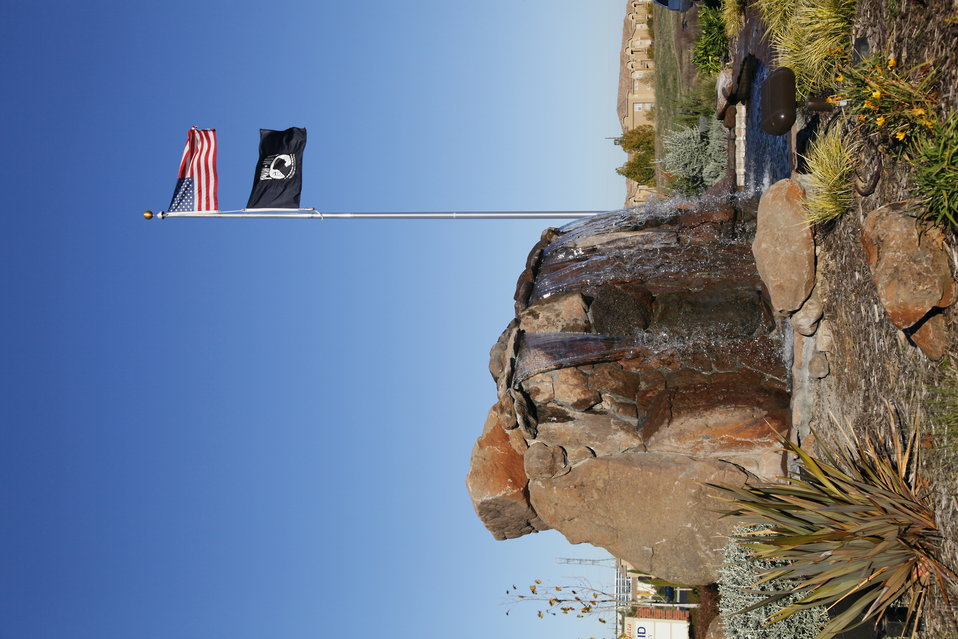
SACRAMENTO, Calif. (Nov. 29, 2010) – The United States flag and the Prisoner of War (POW) / Missing in Action (MIA) flag flap in the wind above the memorial for American veterans at the Veterans Plaza in Roseville, Calif. Designed by the U.S. Army Corps of Engineers Sacramento District, the plaza contains a new Armed Forces Career Center with recruiters representing the Navy, the Marines, the Air Force and the Army.